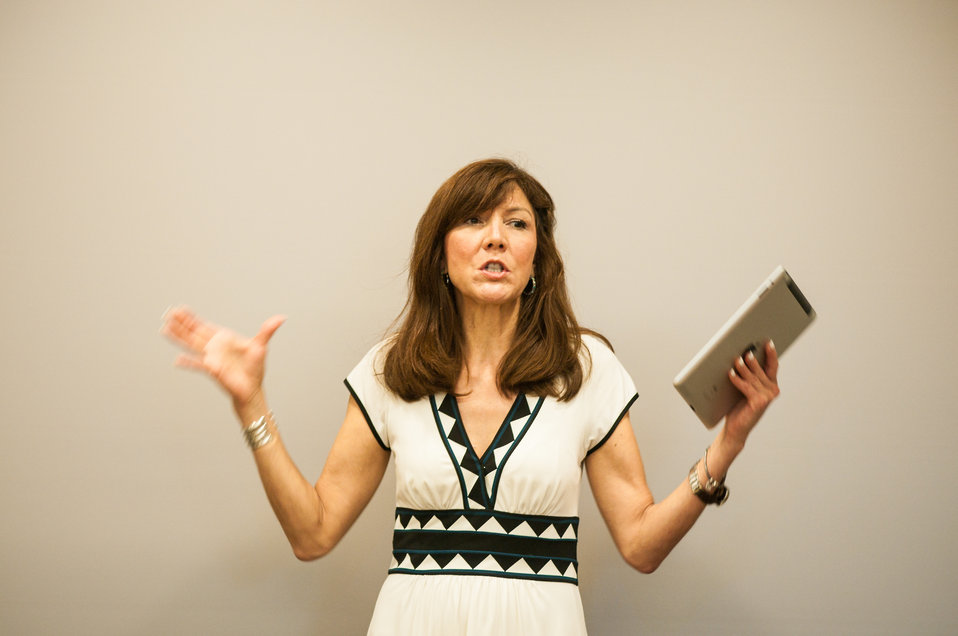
President and Chief Executive Officer American Indian Higher Education Consortium Carrie Billy discusses the value of Tribal Colleges and the United States Department of Agriculture leveraging partnerships at the USDA 2013 Land-Grant Development Tribal Fellows Program held in Washington, D.C. on Monday, Jun. 03, 2013.